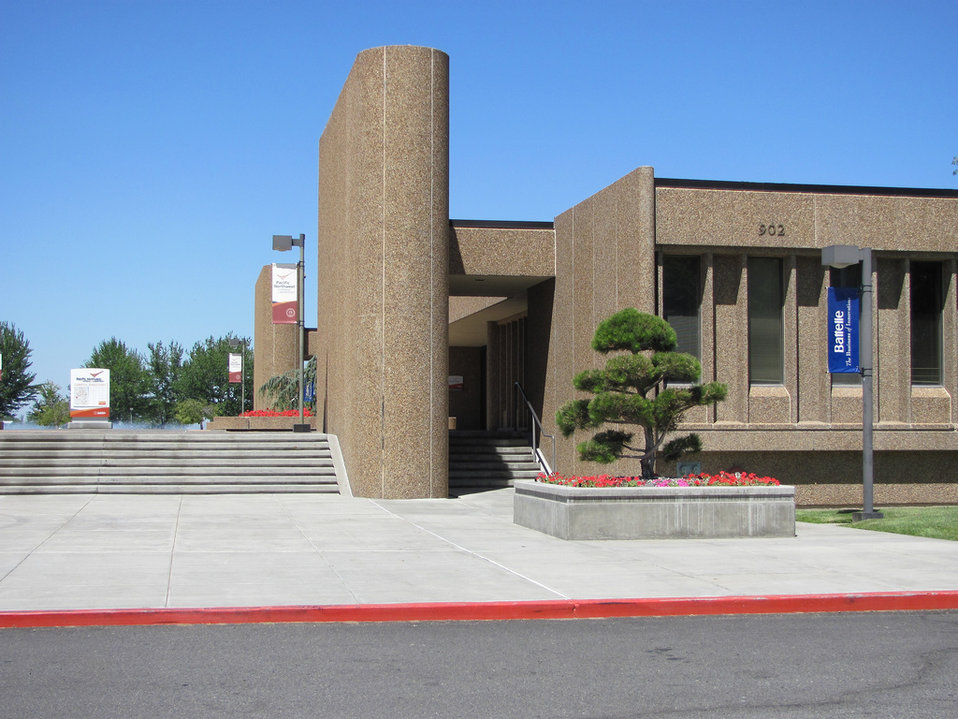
Shown is the Research Operations Building at Pacific Northwest National Laboratory. PNNL is one of the U.S Dept. of Energy's ten national laboratories, managed by the Officeof Science. It also performs research for other DOE offices as well as government agencies, universities, and industry to deliver breakthrough science and technology to meet today's key national needs.